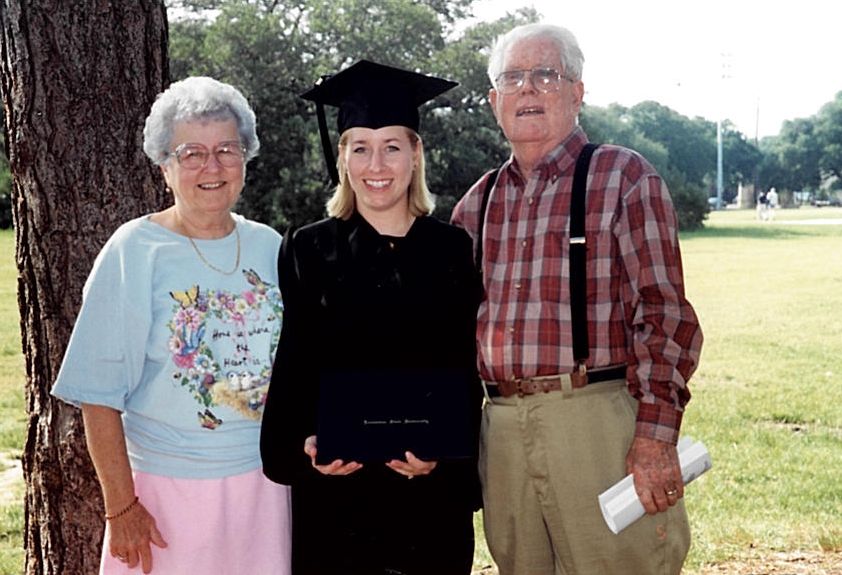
Mindy Gautreaux, Graduation Day

Mindy Gautreaux poses with her grandparents, Jane and Clyde Wilson, at her college graduation. Today, Gautreaux is deputy manager at Okefenokee National Wildlife Refuge in Georgia.